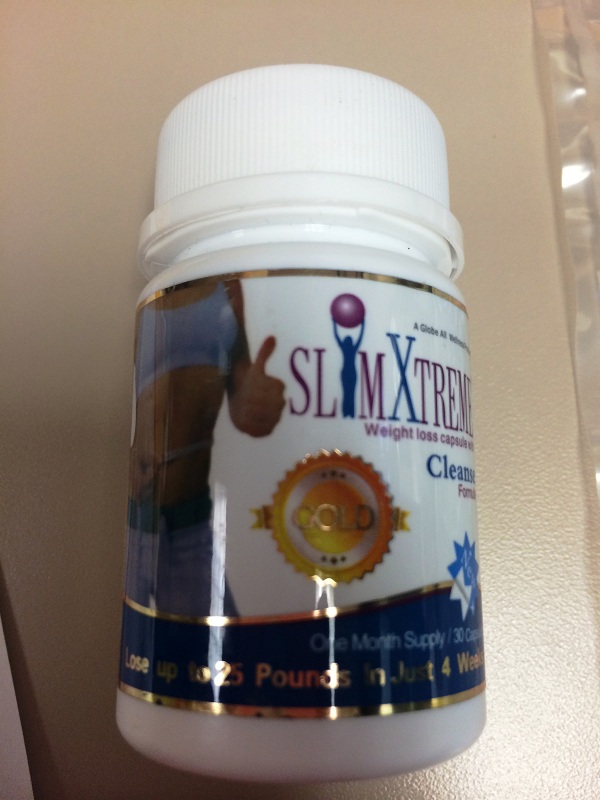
RECALLED - Reduce Weight Fruta Planta

February 4, 2014 – Product Recall – MyNicKnaxs, LLC. Issues a Voluntary Nationwide and International Recall of All Weight Loss Formulas of Reduce Weight Fruta Planta.